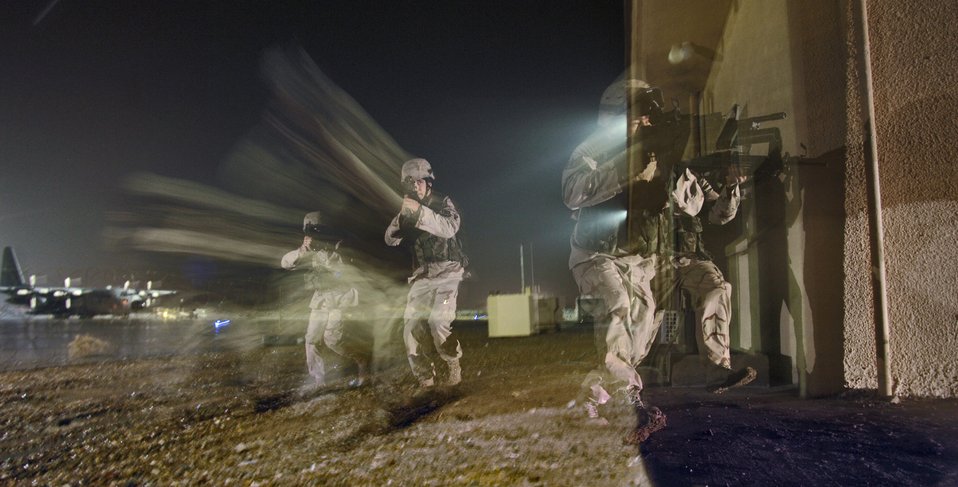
Flyaway security team

BALAD AIR BASE, Iraq (AFPN) - (From left) Senior Airman Darryll Morley, Staff Sgt. Tony Rivera, Senior Airmen Jason Bauer and Staff Sgt. Jason Sawyers (at rear of aircraft), provide security for a C-130 Hercules assigned to the 386th Expeditionary Airlift Squadron here. For aircraft that frequently have short-notice missions into hostile airfields, the 332nd Expeditionary Security Forces Squadron created the flyaway security team to provide specialized security support.